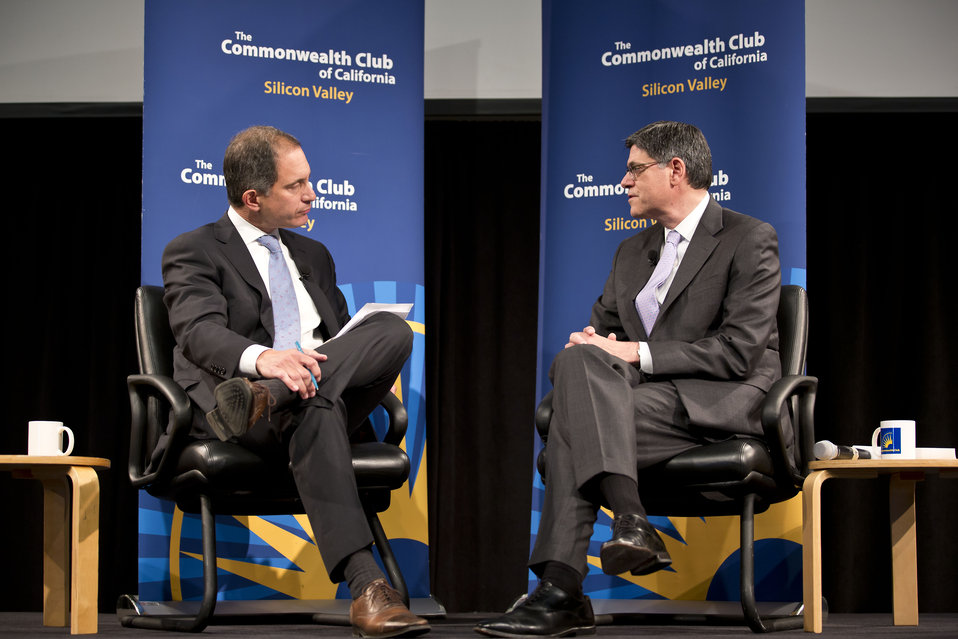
Discussion on the economy at the Computer History Museum

August 22, 2013 -- Secretary Lew participates in a discussion with Fortune Magazine's Adam Lashinsky after delivering remarks to the Commonwealth Club of California.